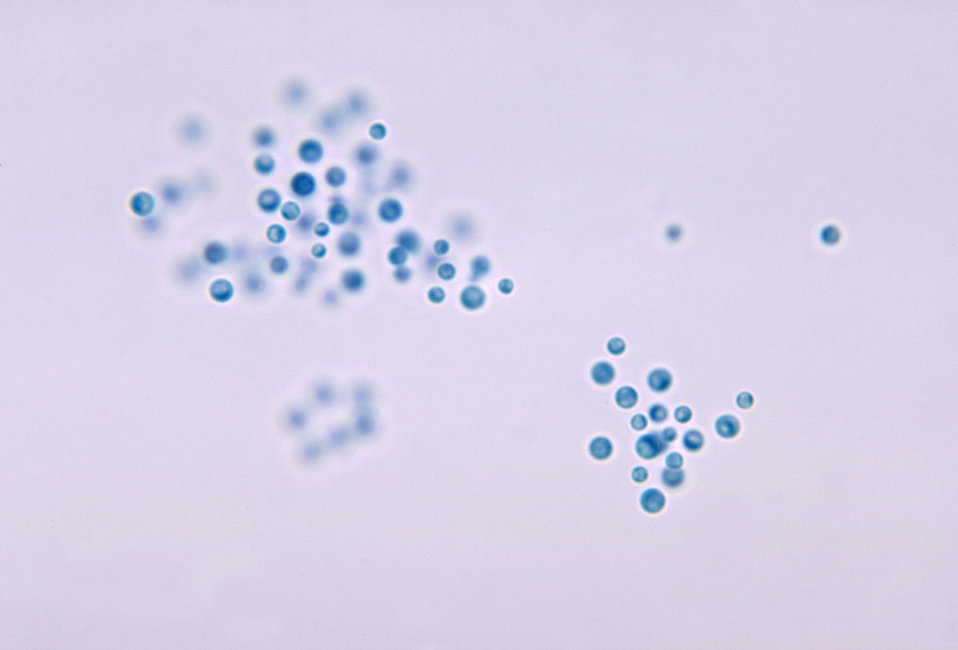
This photomicrograph depicts the encapsulated yeast Cryptococcus neoformans.